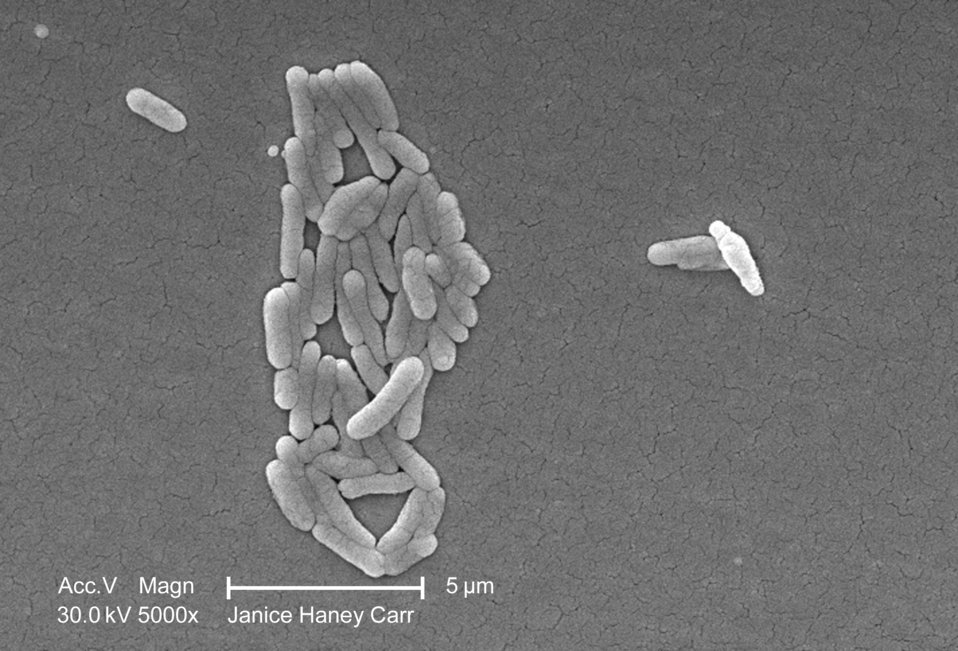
Under a magnification of 5000X, this scanning electron micrograph (SEM) revealed the presence of numbers of clustered Gram-negative Salmonella typhimurium bacteria that were isolated from what was a pure culture specimen. See PHIL 10969 for a colorized version of this image.What sort of germ is Salmonella?